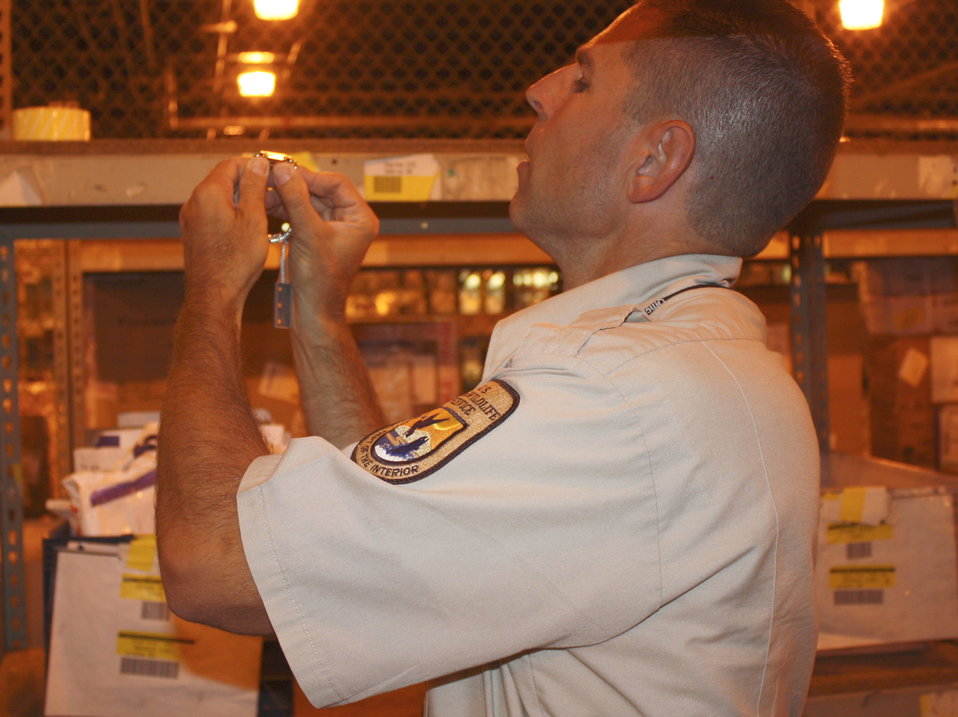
Inspector examines imported watch

Inspector from the Elizabeth, N.J. Office of Law Enforcement examines imported watch.